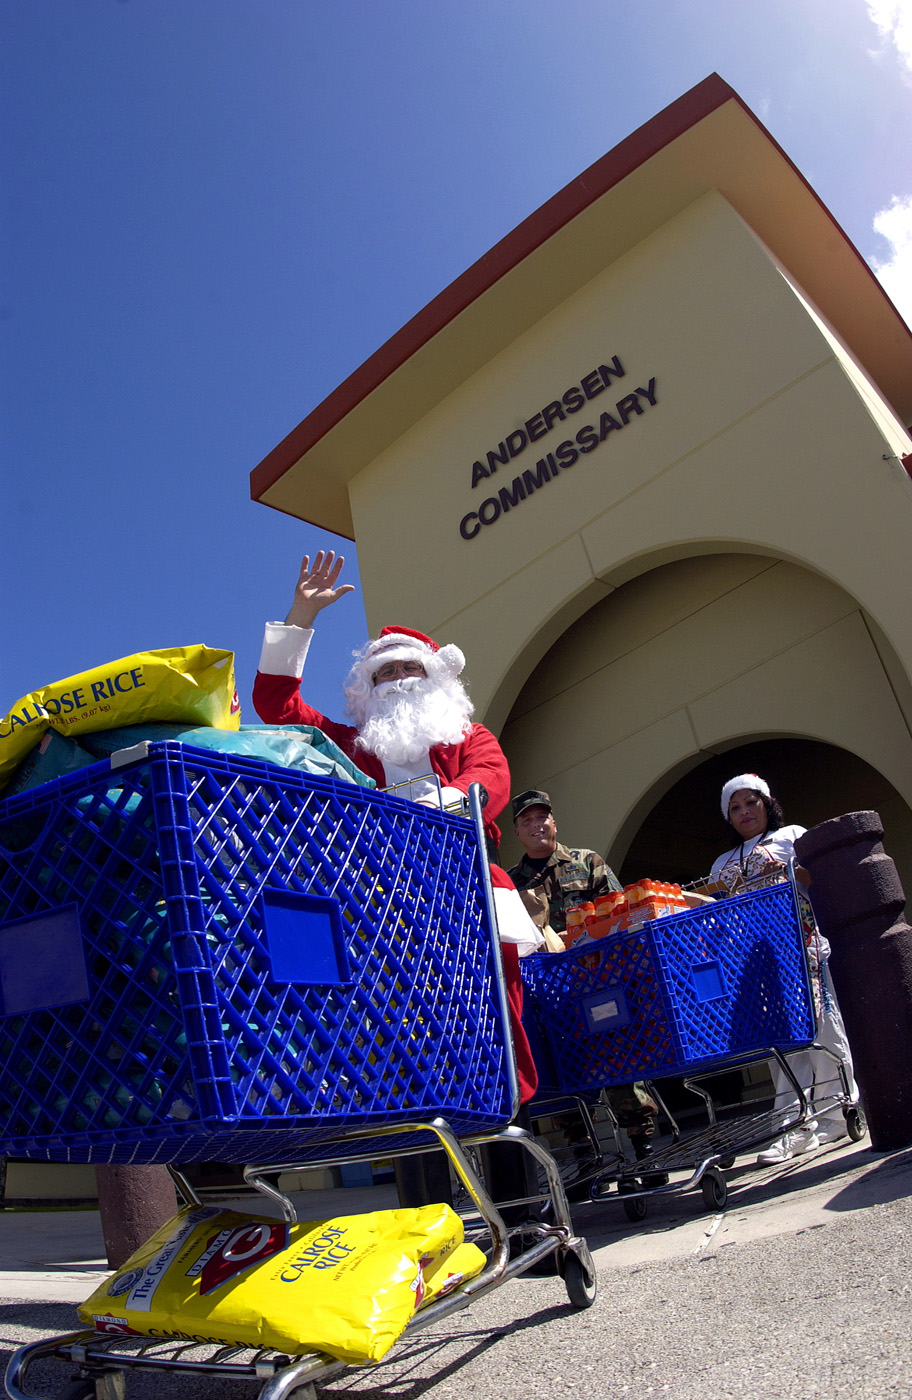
Operation Christmas Drop

ANDERSEN AIR FORCE BASE, Guam (AFPN) -- Santa and his helpers -- Senior Master Sgt. Peter Tetreault and Rose San Nicolas -- push carts full of holiday donations out of the commissary here. The donated food items will be used in this year's Operation Christmas Drop, a 53-year-old tradition. C-130 Hercules aircraft from Yokota Air Base, Japan, flew here today, load up the donated gifts and